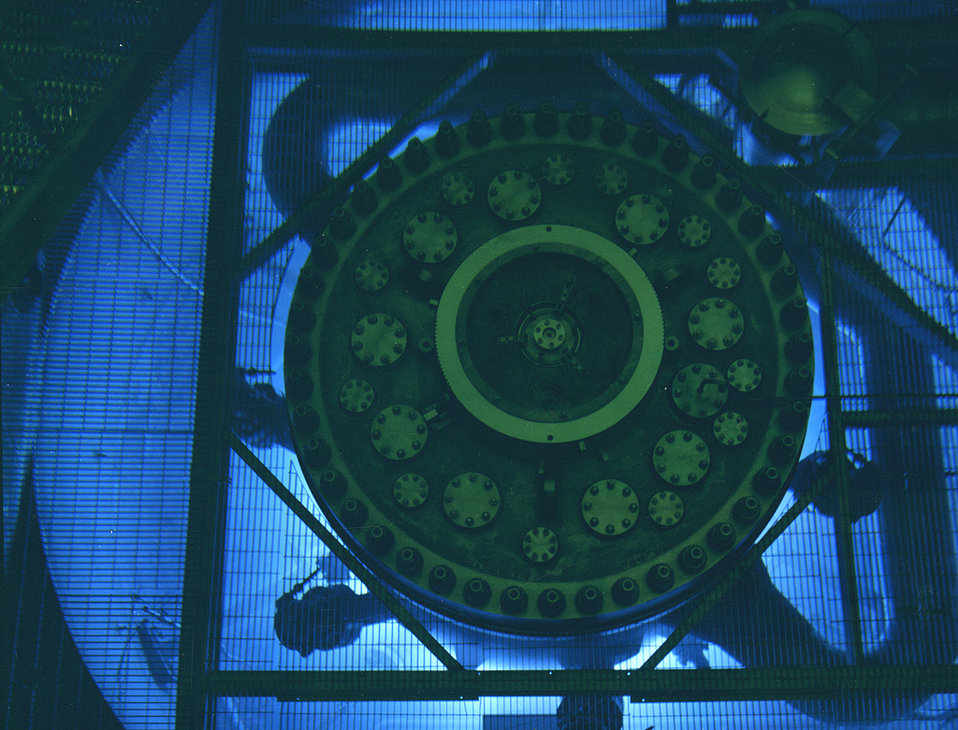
THE REACTOR POOL AT THE HIGH FLUX ISOTOPE REACTOR IN OAK RIDGE. PRIMARY A RESEARCH REACTOR, THE HFIR ALSO IS USED FOR THE PRODUCTION OF MEDICAL ISOTOPES.